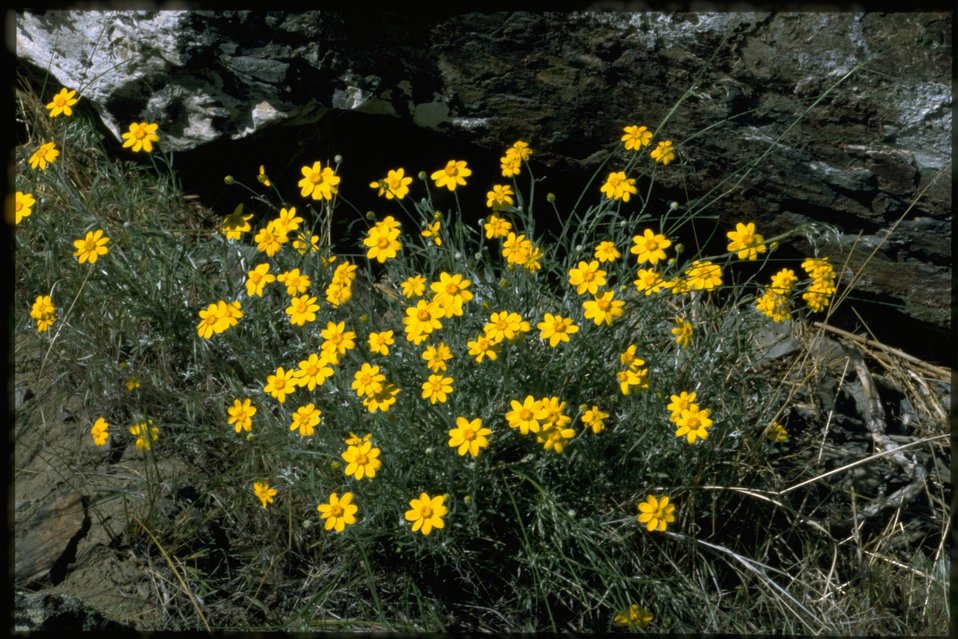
Medium shot of Asteraceae.